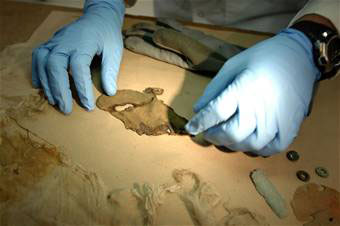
Brooks lab offers last-ditch effort to identify remains

An equipment analyst at the Life Sciences Equipment Laboratory inspects fabric recovered from a site in an attempt to identify the servicemember lost in the crash Nov. 4 at Brooks City-Base, Texas. The lab, at Brooks City-Base in San Antonio, helps the Joint POW/MIA Accounting Command identify servicemembers where recovery sites yield little or no human remains.